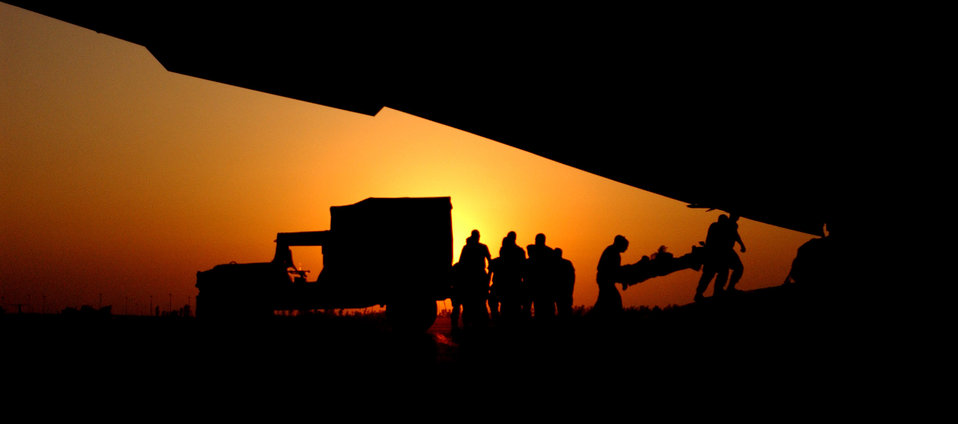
Early flight home

BAGHDAD, Iraq -- At the break of dawn, wounded are moved to a C-17 Globemaster III. The 379th Mobile Aerial Medical staff evacuated them from Baghdad International Airport while supporting of Operation Iraqi Freedom.